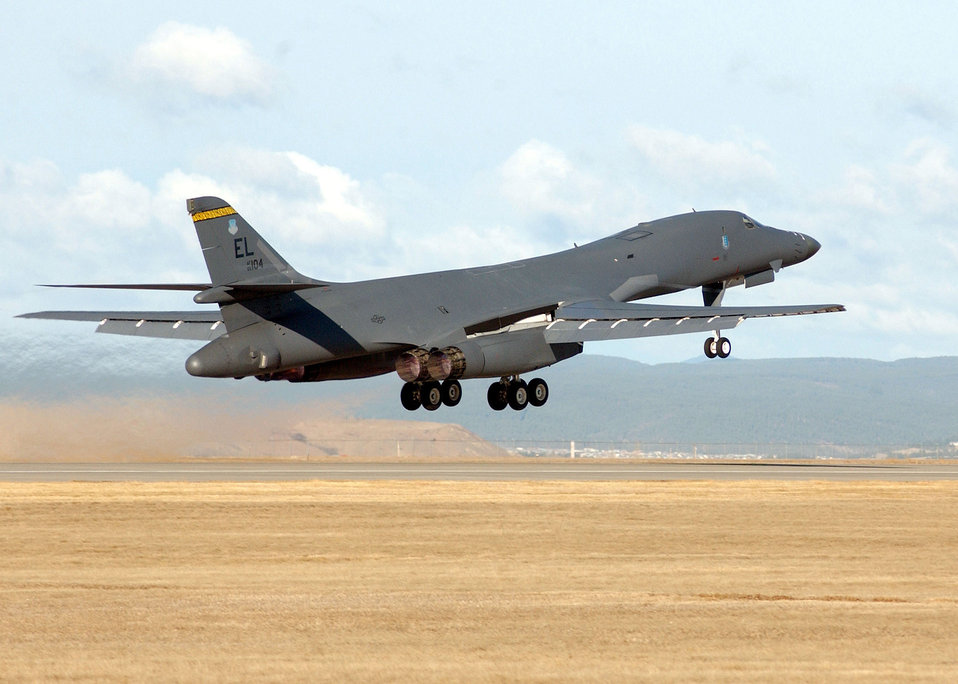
Lancer lift off

ELLSWORTH AIR FORCE BASE, S.D. -- A B-1B Lancer takes off on a routine mission from here. Carrying the largest payload of both guided and unguided weapons in the Air Force inventory, the multi-mission Lancer is the backbone of America's long-range bomber force.